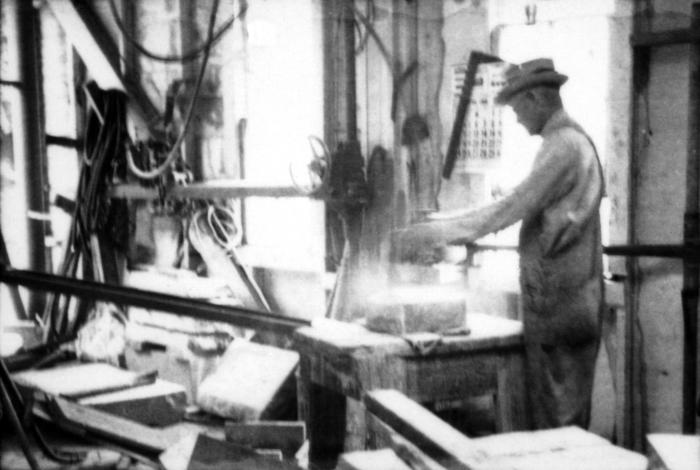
This October 1947 photograph was provided by the Center for Disease Control's (CDC), National Institute for Occupational Safety and Health (NIOSH). The image depicted a stonecutter who was shaping a granite gravestone by using a powered drill sander inside a Kansas workshop. While the worker 'appeared' to be wearing eyeglasses, which offered very little in the way of vision protection, he was not wearing any barrier to dust that could have been inhaled, such as a filtered breathing apparatus. Workers like this mason, can be exposed to potential respiratory health hazards as well as other physical injuries when working in the stone cutting and quarrying industries.